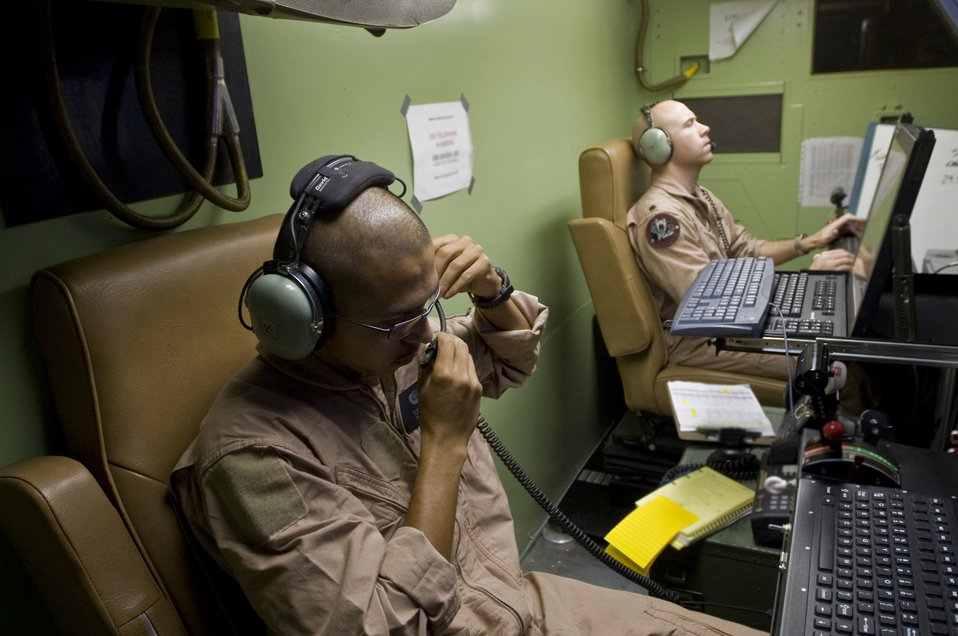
Predator preparations

Lt. Col. Geoffrey Barnes and Senior Airman Claudio Vela Jr. prepare to land an MQ-1 Predator unmanned aircraft system from a nearby control room Sept. 3 at Ali Base, Iraq. Colonel Barnes and Airman Vela are deployed from Creech Air Force Base, Nev., and are assigned to the assigned to the 46th Expeditionary Reconnaissance and Attack Squadron Det. 1. The Predator is a medium-altitude, long-endurance, remotely piloted aircraft. Its mission here is to interdict and conduct armed reconnaissance against critical and perishable targets in support of the war on terrorism.